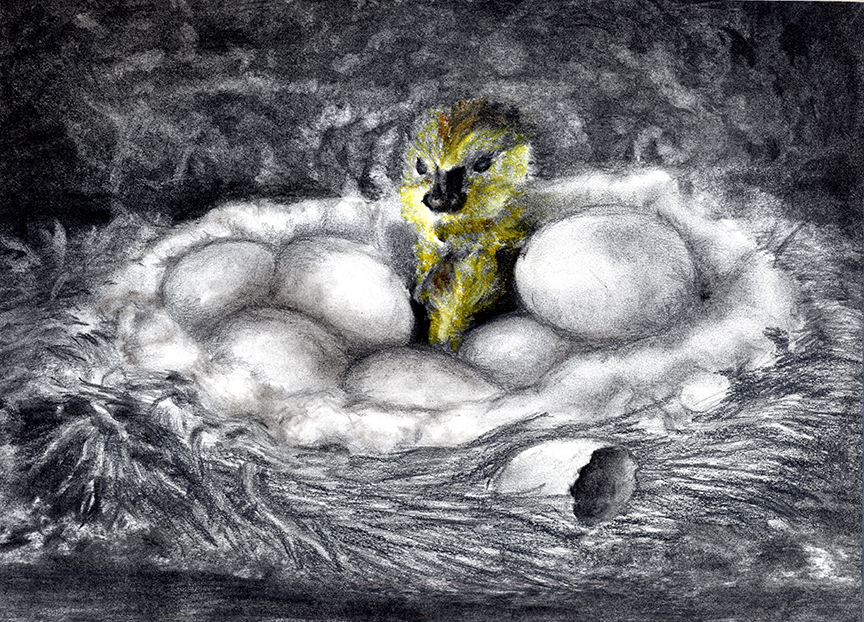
JRDuck2013NM

2013 Junior Duck Stamp Best of Show-New Mexico